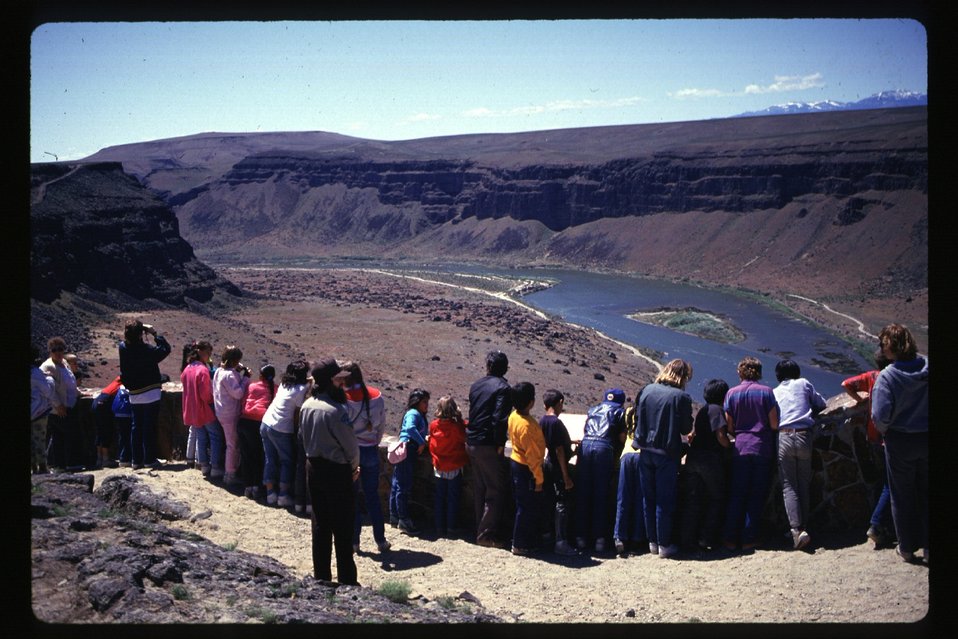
School Group at Dedication Point BOP Environmental Education Birds of Prey National Conservation Area BOP NCA Owyhee Field Office LSRD Lower Snake River District